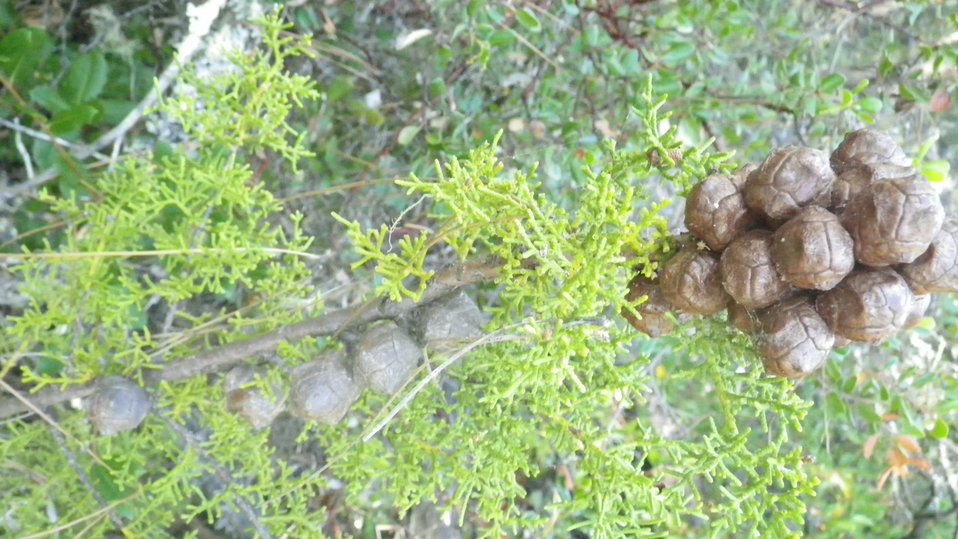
Santa Cruz Cypress Cones

Santa Cruz cypress (Hesperocyparis abramsiana) can live to be 100 years old. Trees reach reproductive maturity and begin producing cones at an average age of 11 years and slowly release seeds throughout life; each cone bears 8-10 seeds. However, fire can accelerate seed release and areas that have been recently disturbed by fire can produce a high number of saplings.